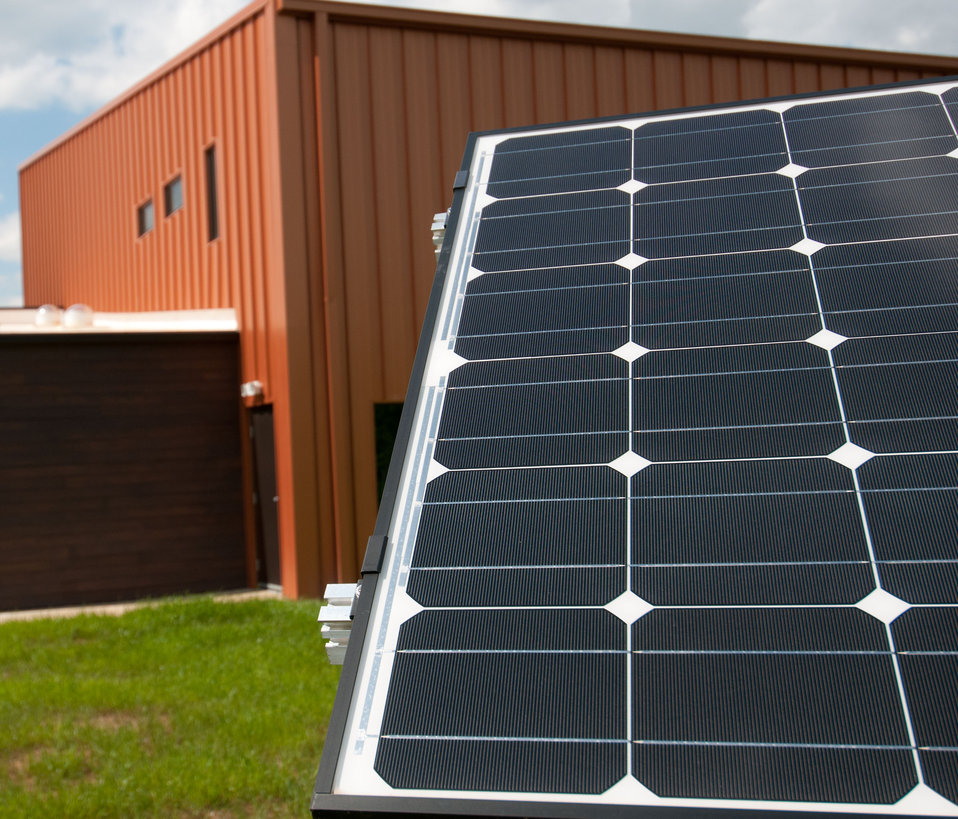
Solar photovoltaic array at Cooper Vineyards in Louisa, VA, the first winery on the East Coast and the second in the country to be awarded the fourth and highest, Platinum certification by Leadership in Energy and Environmental Design (LEED), May 4, 2011.
From a Virginia Wine Board Marketing Office press release, “The process of building a LEED platinum certified building was initially more expensive and arduous than co-owners, Jacque Hogge, MD and Geoffrey Cooper, MD expected, but they were able to get financial assistance from the United States Department of Agriculture. “Know that there are grants available to help with the costs of sustainable building projects,” Hogge advises to other potential green wineries. Cooper Vineyards received 2 of the 3 USDA (U.S. Department of Agriculture Rural Development (RD) Rural Energy Financing program) grants awarded in Virginia in 2010 to help with the expenses of their construction.”
Rural Energy Financing program focuses on loan guarantees, loans and grants to agricultural producers, businesses, cooperatives and rural residents for renewable energy systems and to make energy efficiency improvements.
The tasting room and building collects rainwater from the roof; uses low flow water fixtures to reduce usage by 40%; utilizes structurally insulated panels for the roof and walls; heats and cools the entire building using a geothermal system that includes pipes that are embedded in the parking lot; low-voltage LED lighting with daylight and occupancy sensors provide ample light when it is needed; a solar panel array provides more than 15% of the energy needs for the building, and much of the construction materials are from local and recycled material sources. For more information about USDA please go to www.usda.gov, Rural Development and Rural Energy Financing. LEED was developed by the U.S. Green Building Council (USGBC) is a 501 c3 non-profit organization committed to a prosperous and sustainable future for our nation through cost-efficient and energy-saving green buildings.